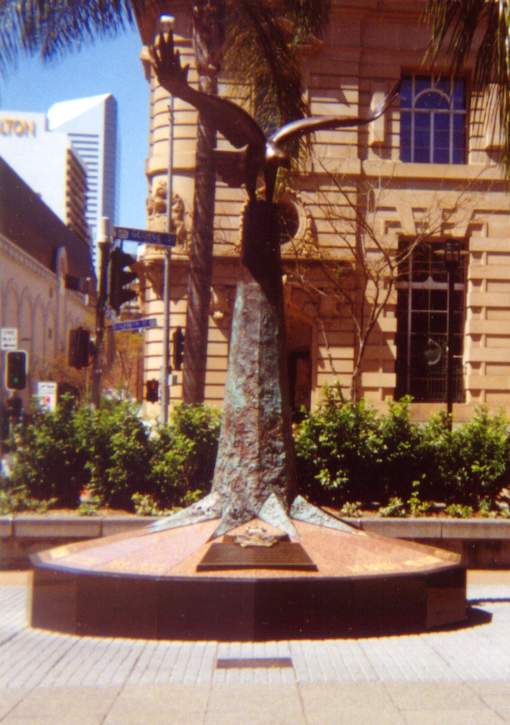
RAAF Memorial in Queens Gardens, Brisbane
( this photograph was taken by Figaro )